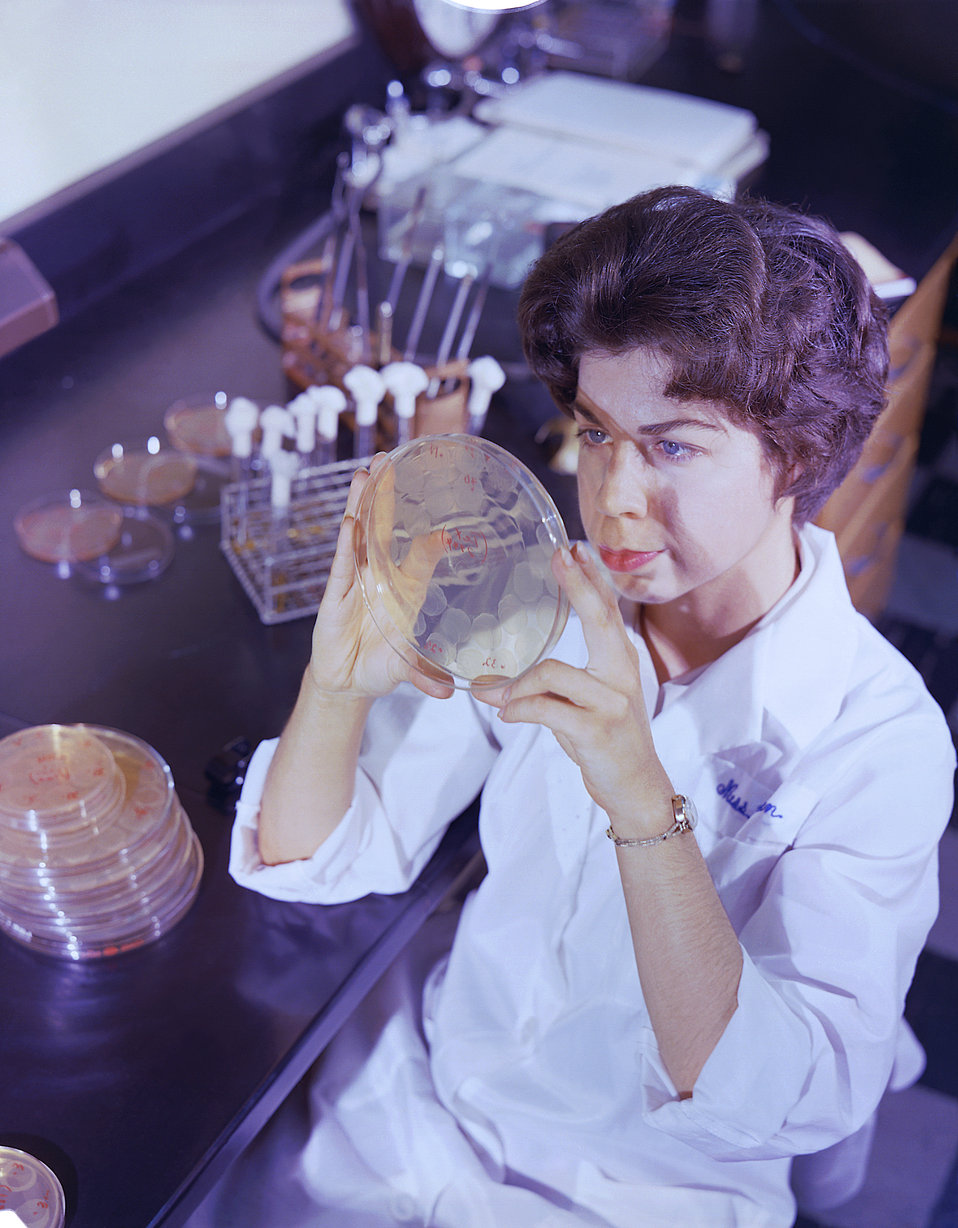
This historic 1963 photograph depicted laboratorian Gail Wathen, as she was performing an examination of an agar culture Petri dish, which had been inoculated with Salmonella typhi, and typed using bacteriophage methods.